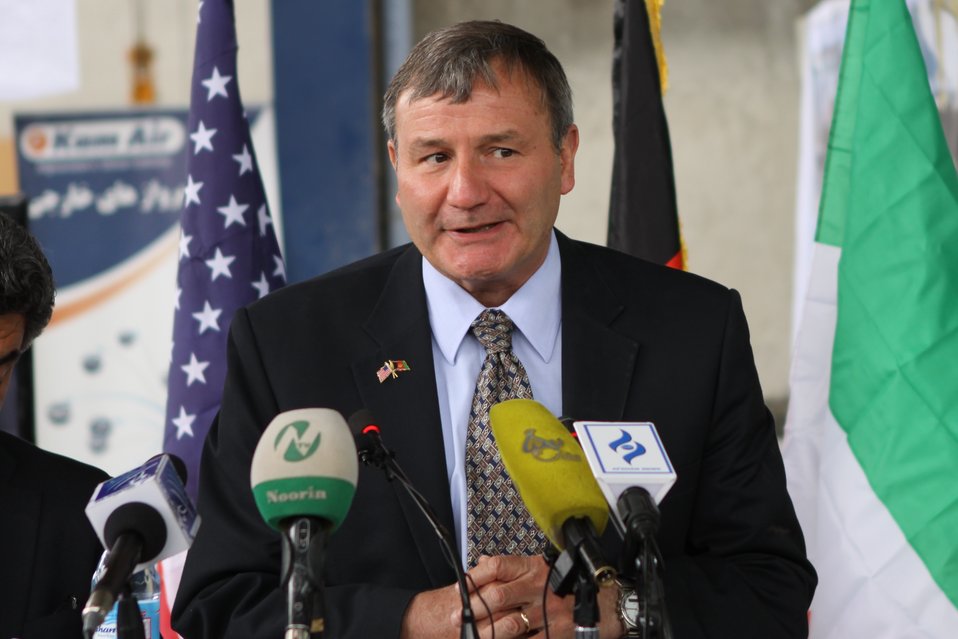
100525 Hirat Marble Conference 227